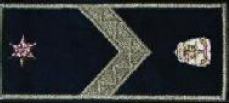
Magyar: Magyar Rendőrség rangjelzése: Őrmester